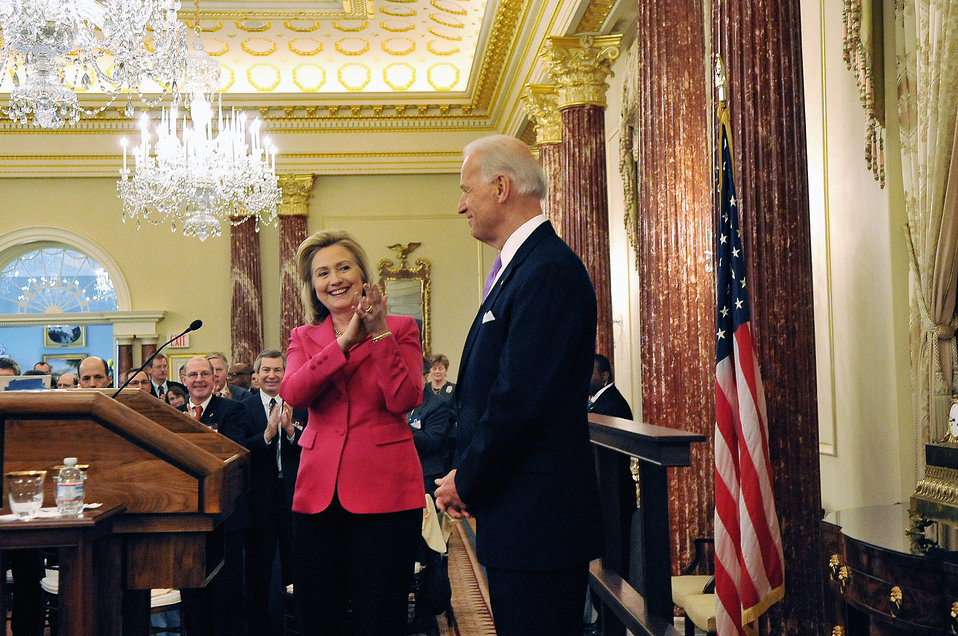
Secretary Clinton Introduces Vice President Biden

U.S. Secretary of State Hillary Rodham Clinton introduces U.S. Vice President Joseph Biden to speak at the 2011 Global Chiefs of Mission Conference at the U.S. Department of State in Washington, D.C., on January 3, 2011.